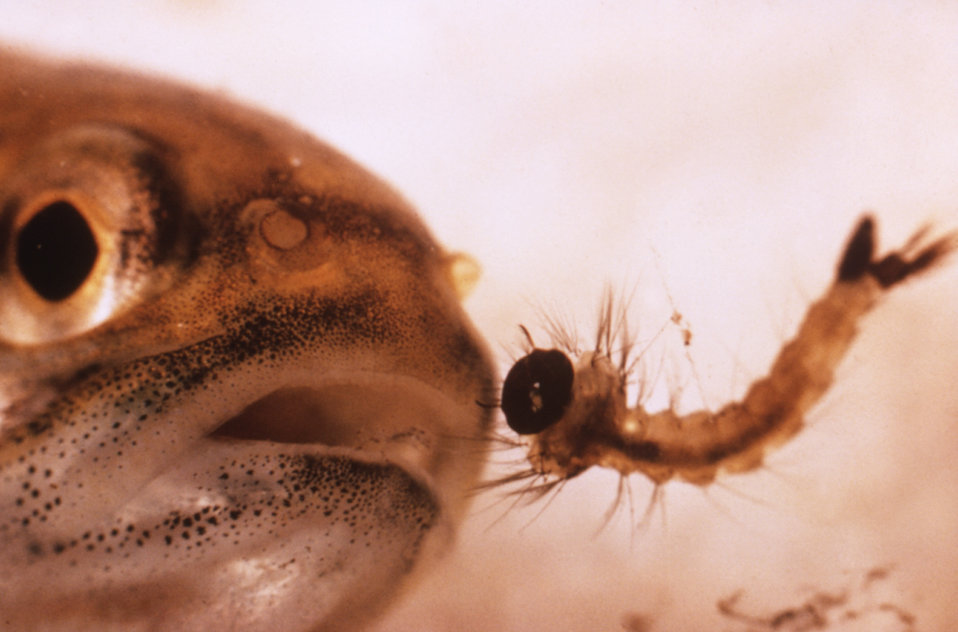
This is a 1976 photograph of a 'Mosquito fish', Gambusia sp., preparing to ingest a mosquito larva.